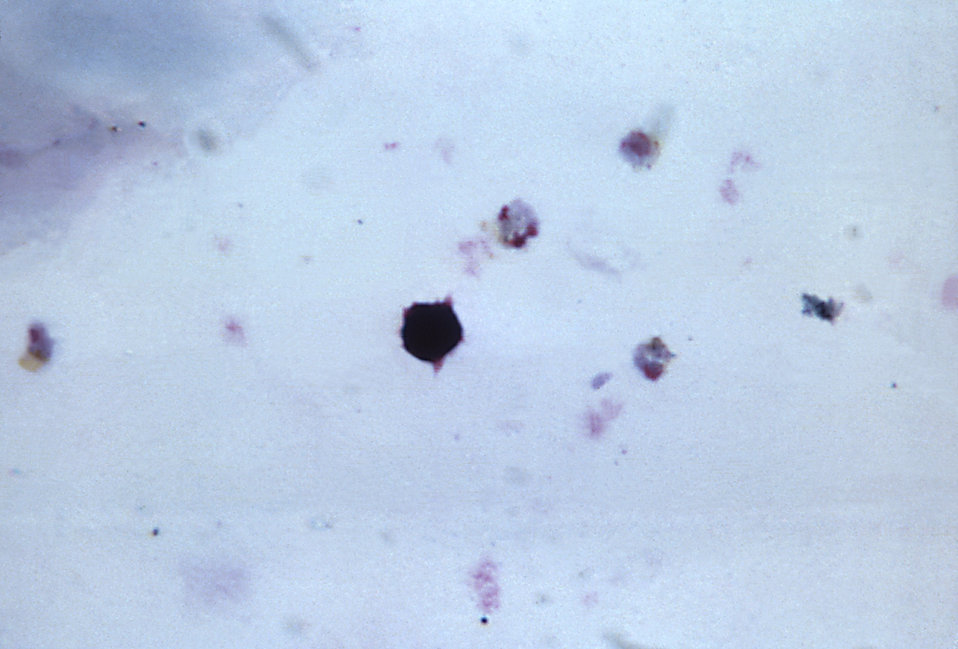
This thin film micrograph depicts both P. malariae schizonts and trophozoites in various stages of development.